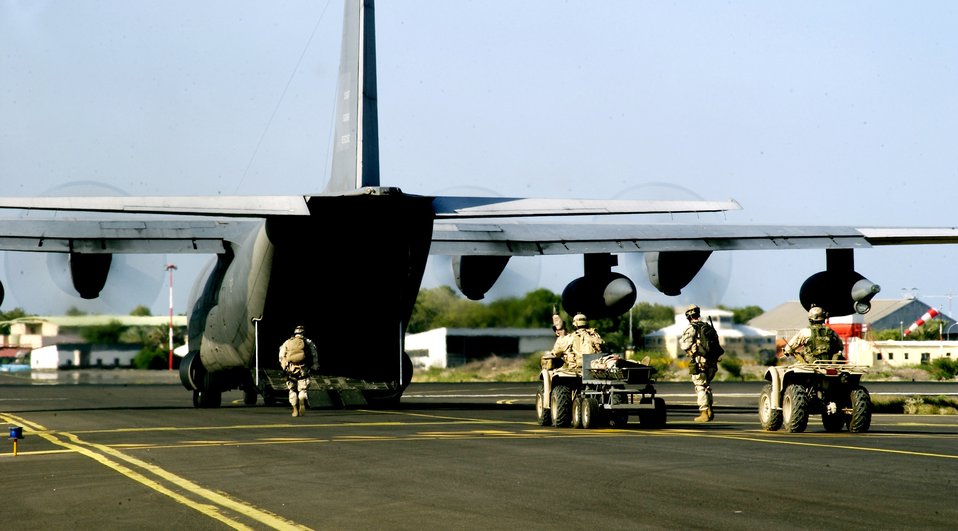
Patient rescue exercise

CAMP LEMONIER, DJIBOUTI, Africa (AFPN) -- Air Force pararescuemen prepare to board a C-130 Hercules with a patient during a simulated patient rescue exercise here Feb. 12.